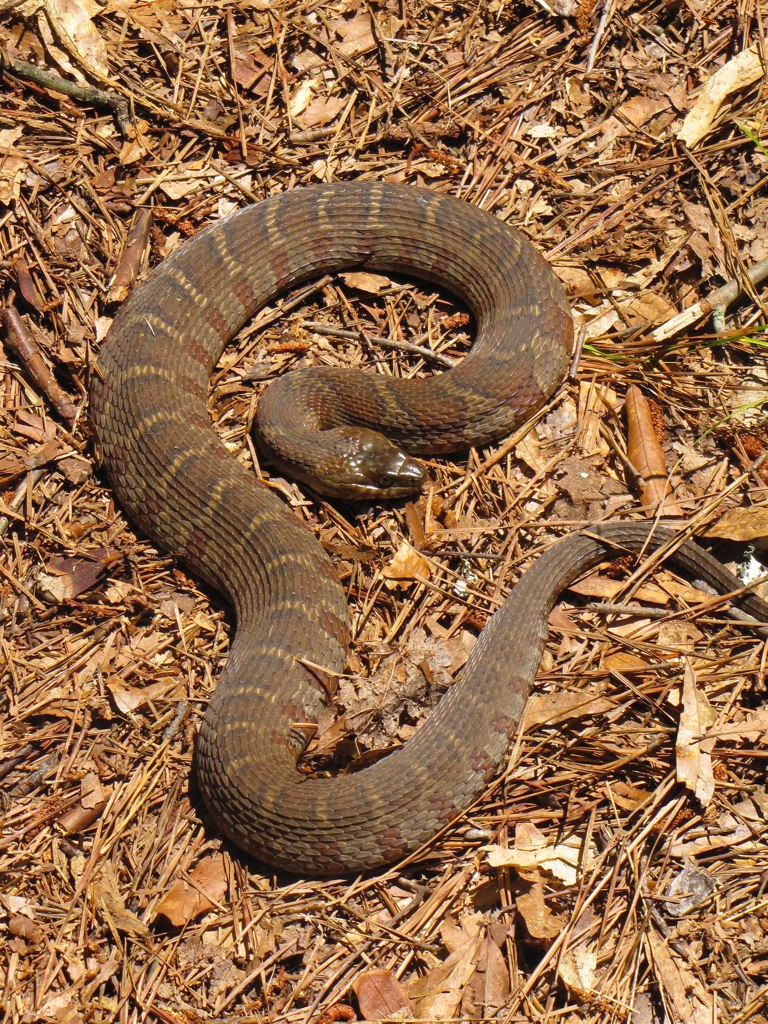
Mattaponi Wildlife Management Area, Virginia

Survey (June 27 - 28, 2012)

Common watersnake (Nerodia sipedon sipedon)